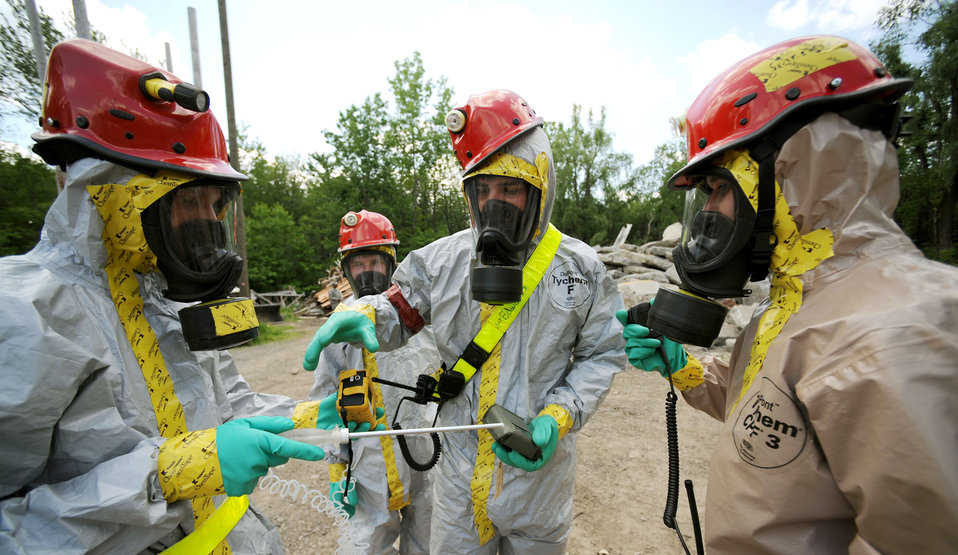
Civic duty

Air Force extraction team members discuss a situation they are faced with during an Empire 2009 Plus scenario June 6 in Albany, N.Y. Members of the 106th Medical Group and 106th Security Forces Squadron participated in the National Guard support to civil authorities exercise.